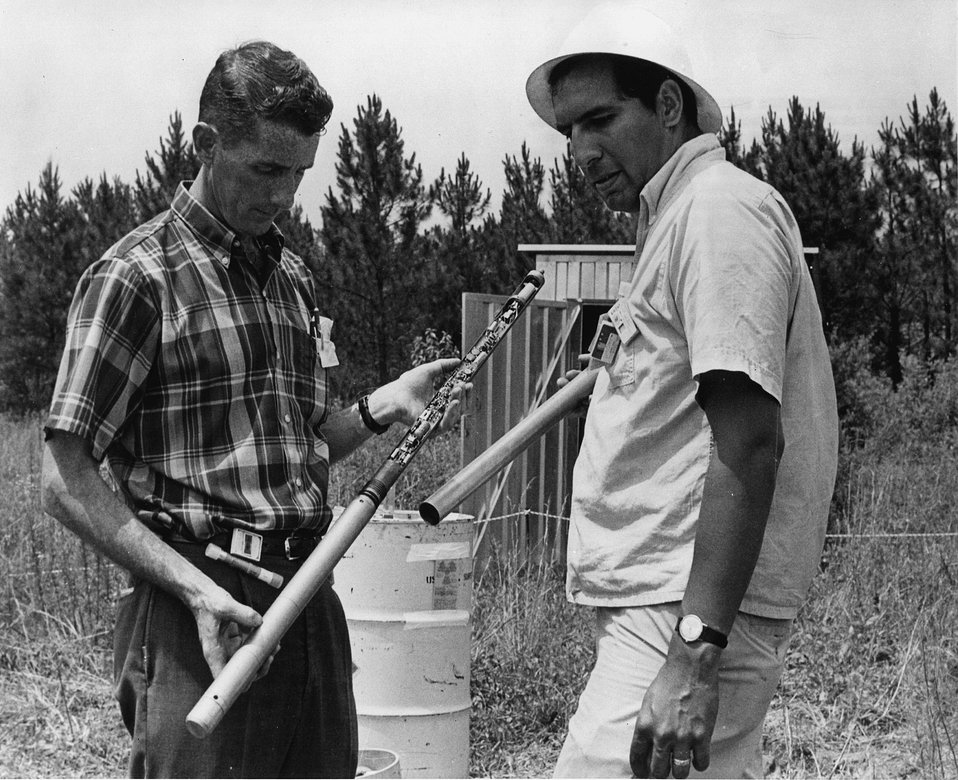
Mineral exploration using californium-252. c. 1969